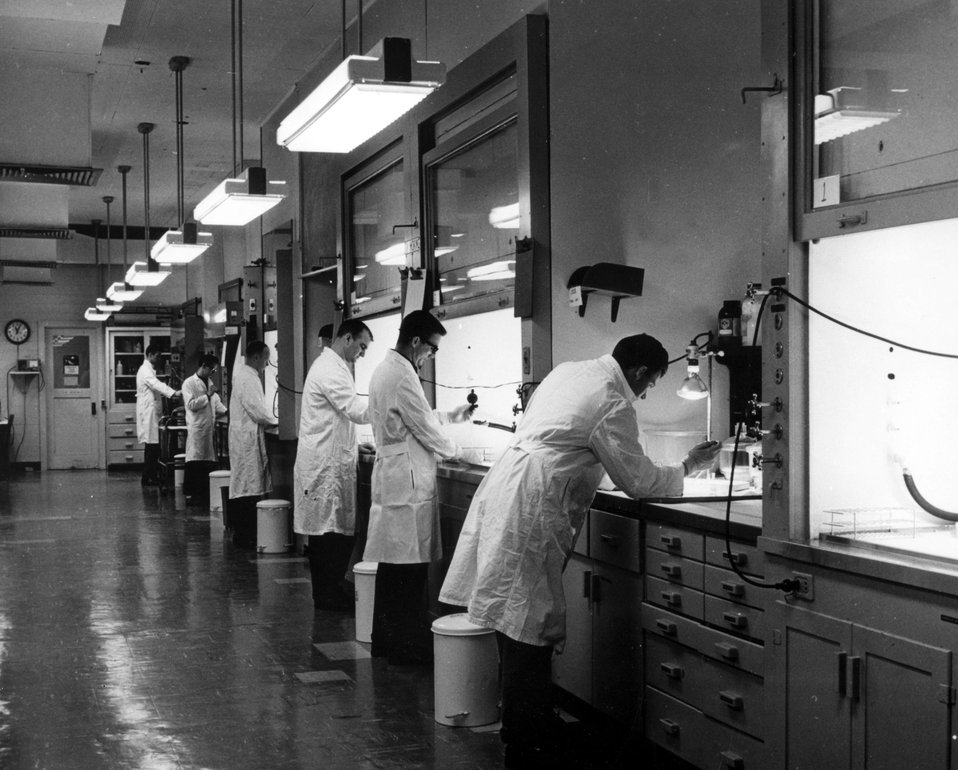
Radiochemistry laboratory in the Special Training Division of Oak Ridge Associated Universities. c. 1970